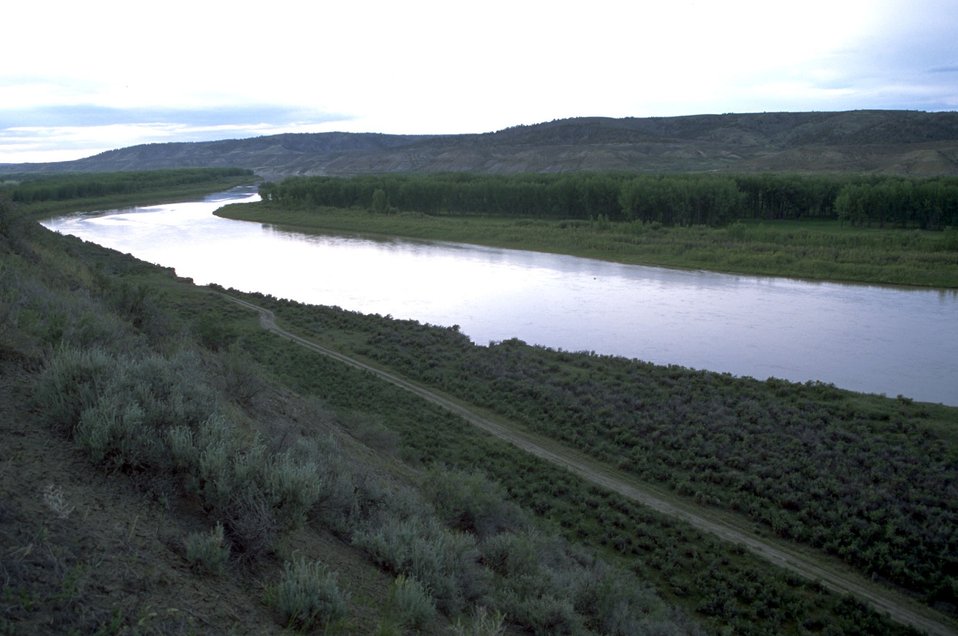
The Missouri River